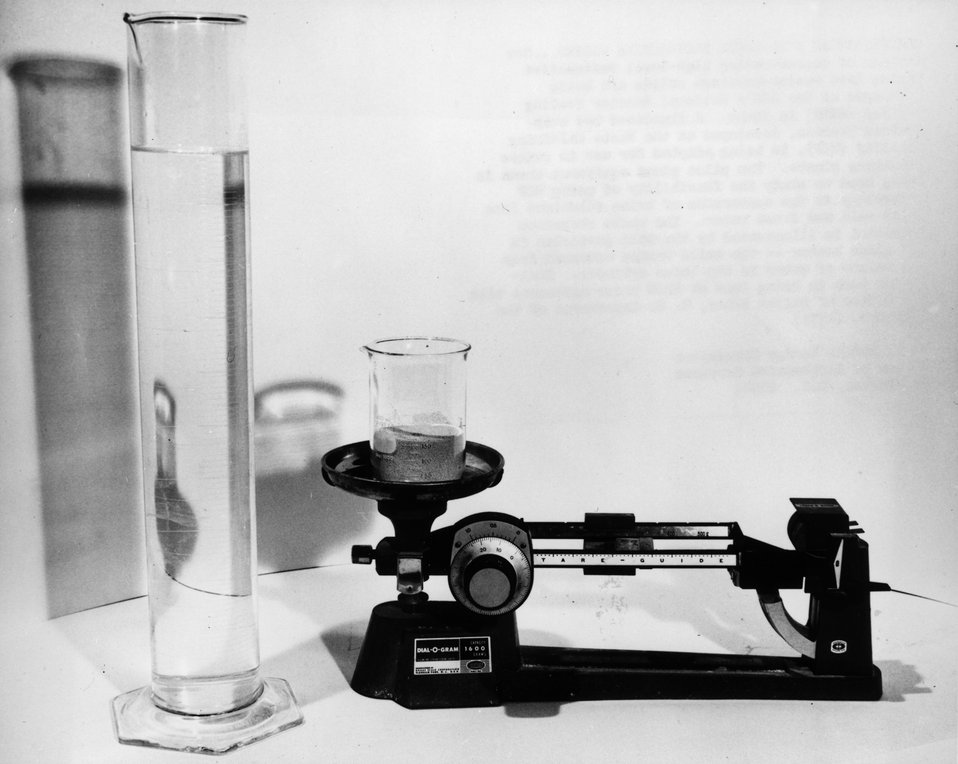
New methods of concentrating high-level radioactive wastes into easier-to-store solids are being developed at the Energy Research and Development Administration's National Reactor Testing Station (NRTS) in Idaho. Circa 1972.